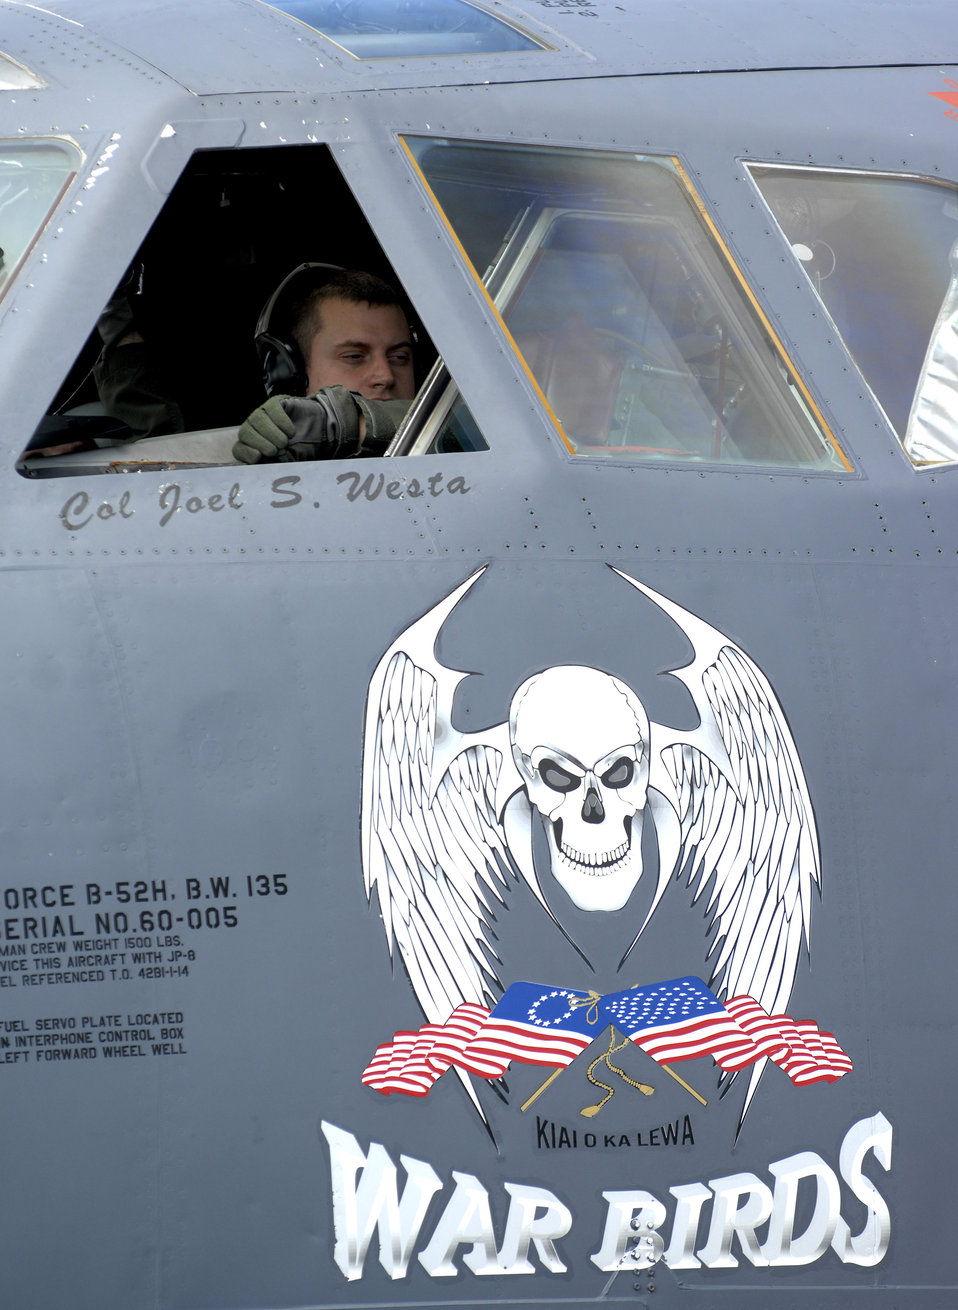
Capt. Aaron Hedrick pilot from the 23rd Expeditionary Bomber Squadron performs preflight checklist before a local B-52 Stratofortress mission at Andersen Air Force Base, Guam. Captain Hedrick is deployed from Minot AFB, N.D. The bomber's participation in constant training helps emphasize the U.S. bomber presence, demonstrating U.S. commitment to the Pacific region.